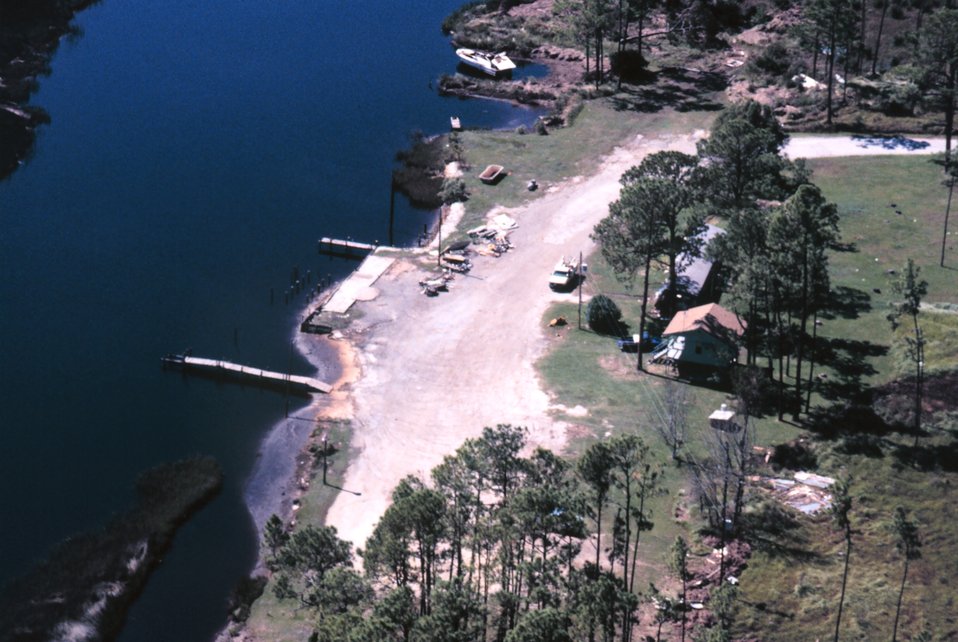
Grand Bay National Estuarine Research Reserve. Bayou Cumbest and Port-o-Pines Boat Ramp. Honky-tonk bar between docks over Bayou Cumbest destroyed by Hurricane Georges. Bayou Cumbest and Port-o-Pines Boat Ramp.